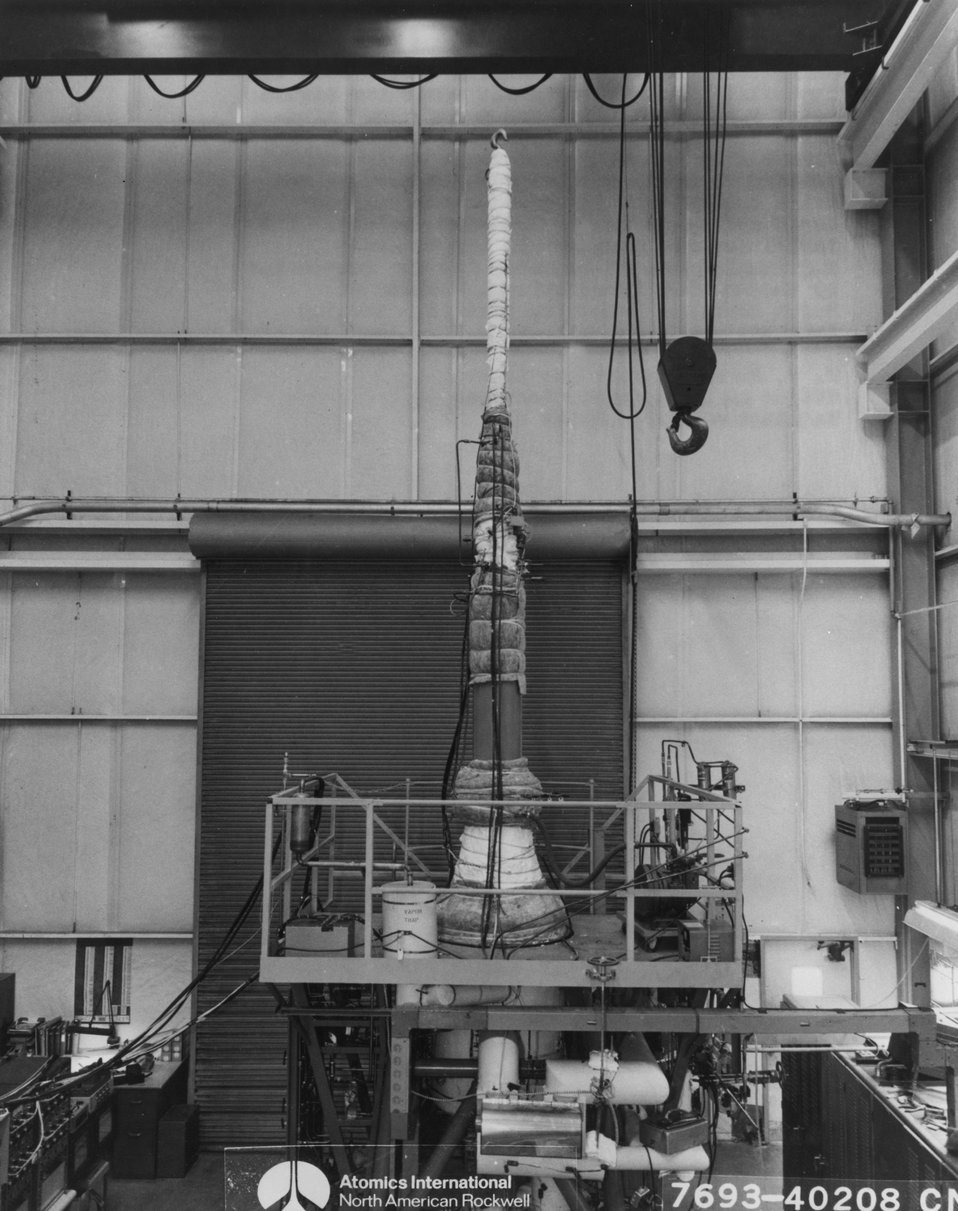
Pump Fuel Test Facility (PFTF) have the capability for testing shaft seals for Liquid Metal Fast Breeder Reactor pumps under simulated sodium service conditions. c. 1973